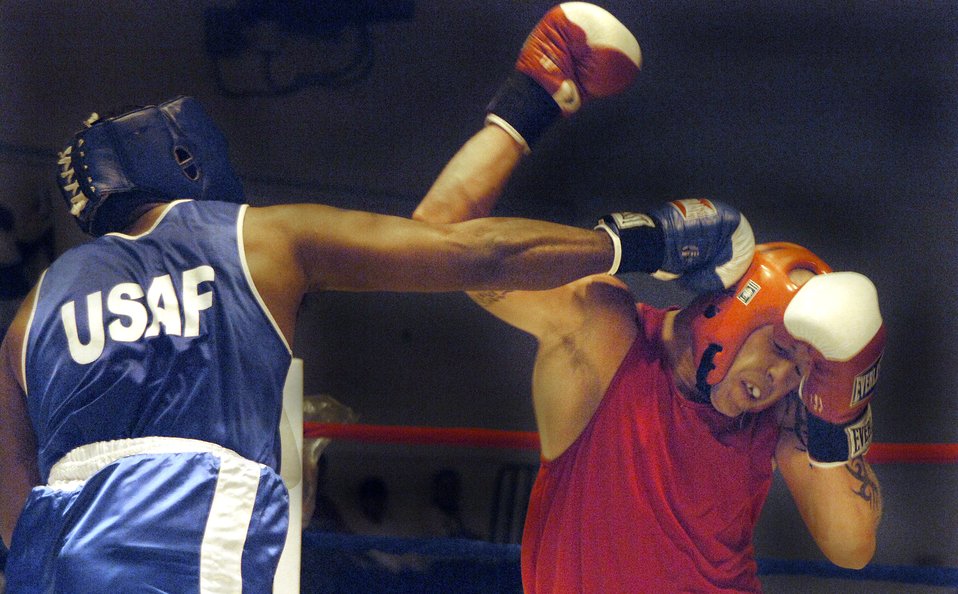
Boxing Royale

Army Sgt. Arien Edwards, a member of the Lackland Air Force Base boxing team, connects with a straight right to the head of Royal Air Force Senior Aircraftsman Craig Donald in the first round of the Boxing Royale at the Bennett Fitness Center in San Antonio on Saturday, June 10. The event featured RAF boxers competing against U.S. military and local boxers. Donald won by decision.